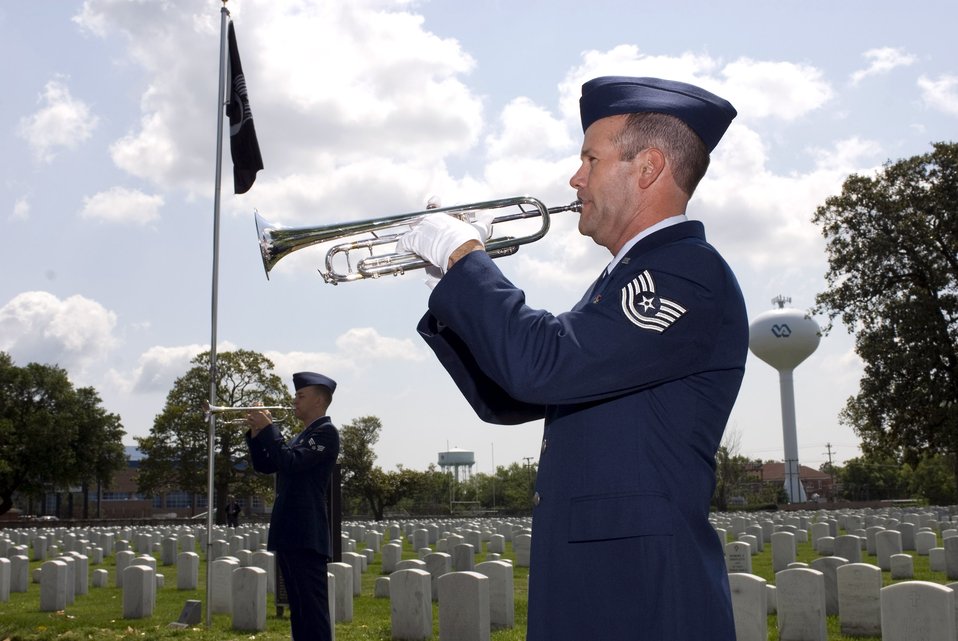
Retired Tech. Sgt. Robert E. Havener (right) and Senior Airman Justin D. Hunniecutt play